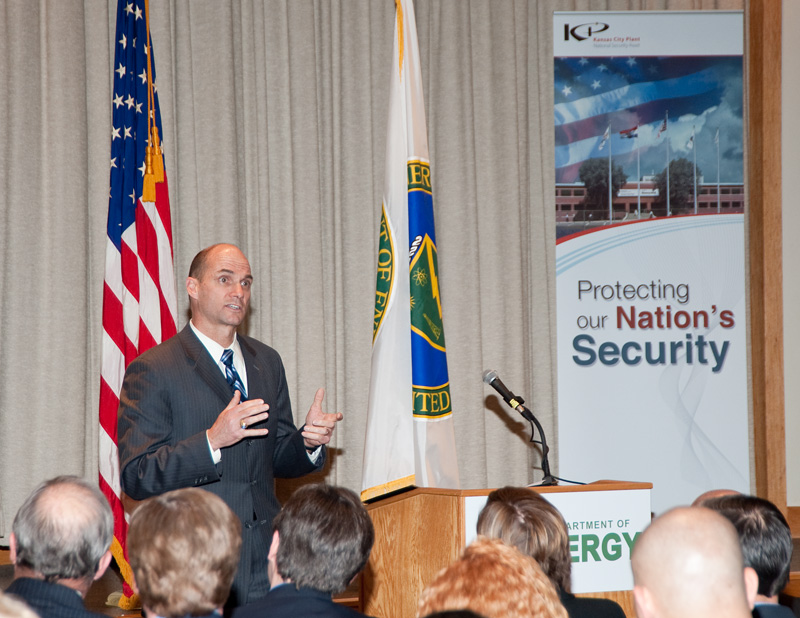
NNSA Administrator Thomas D'Agostino addresses KCP employees.